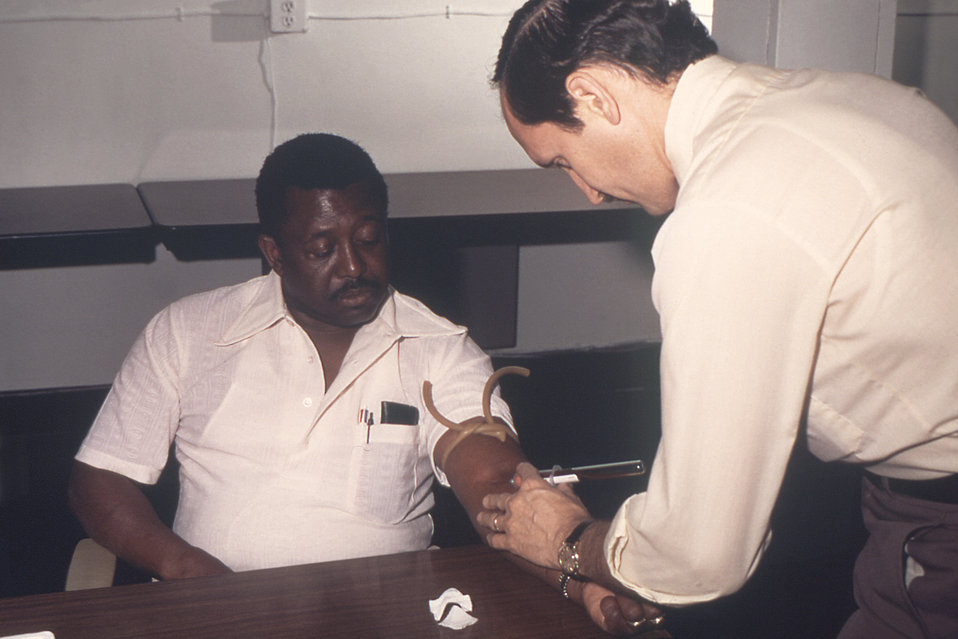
From 1976, this photograph depicted Dr. Gary Noble as he was drawing blood from a male patient that would be tested for its concentration of influenza antibodies. This image was captured during the National A/New Jersey/76 Influenza Study Program.